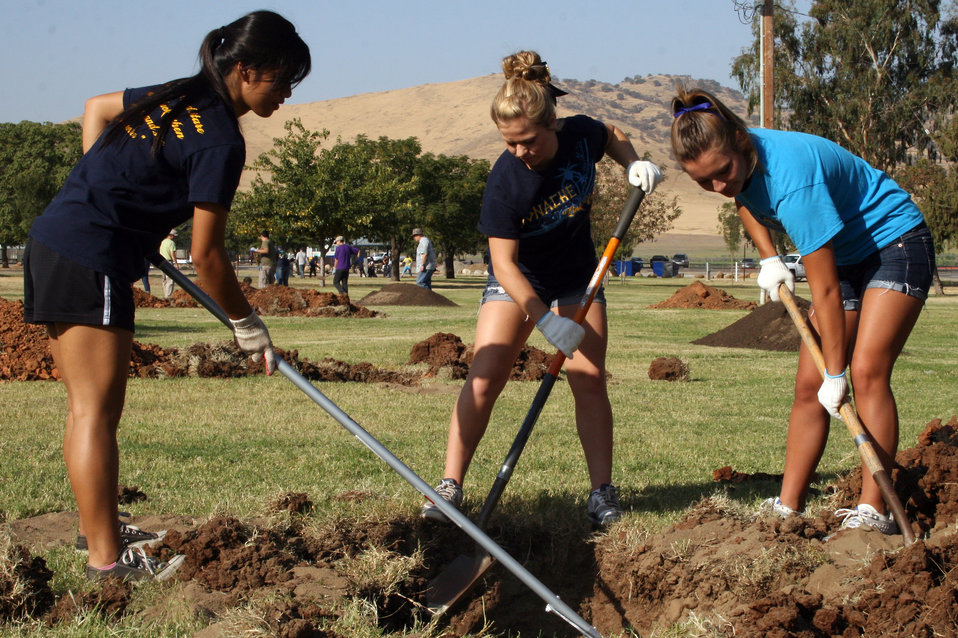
Diggin' it! (National Public Lands Day 2012)

Monache High School environmental science academy students plant a tree at Success Lake during National Public Lands Day, Sept. 29, 2012. U.S. Army Corps of Engineers park staff and an army of volunteers celebrated the day with park improvement projects, camaraderie and food.